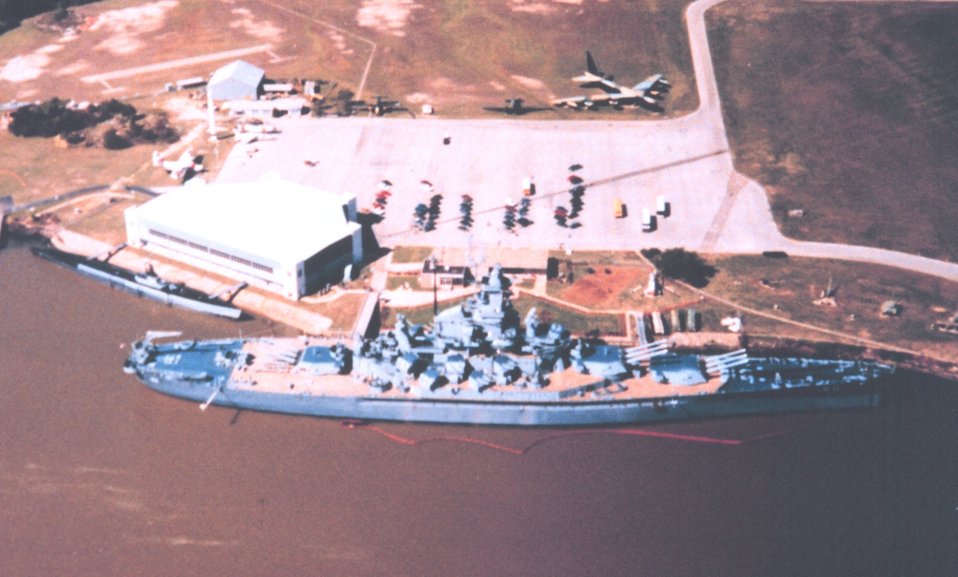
The Battleship Alabama at Mobile.